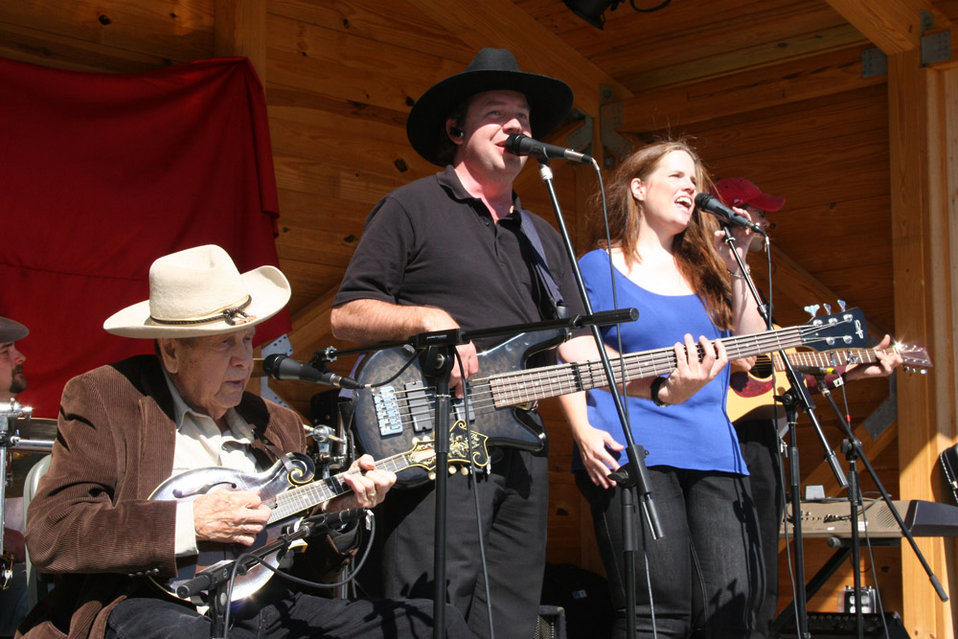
Freshwater Folk Festival

The 5th Annual Freshwater Folk Festival at White Sulphur Springs National Fish Hatchery in West Virginia.Credit: USFWS